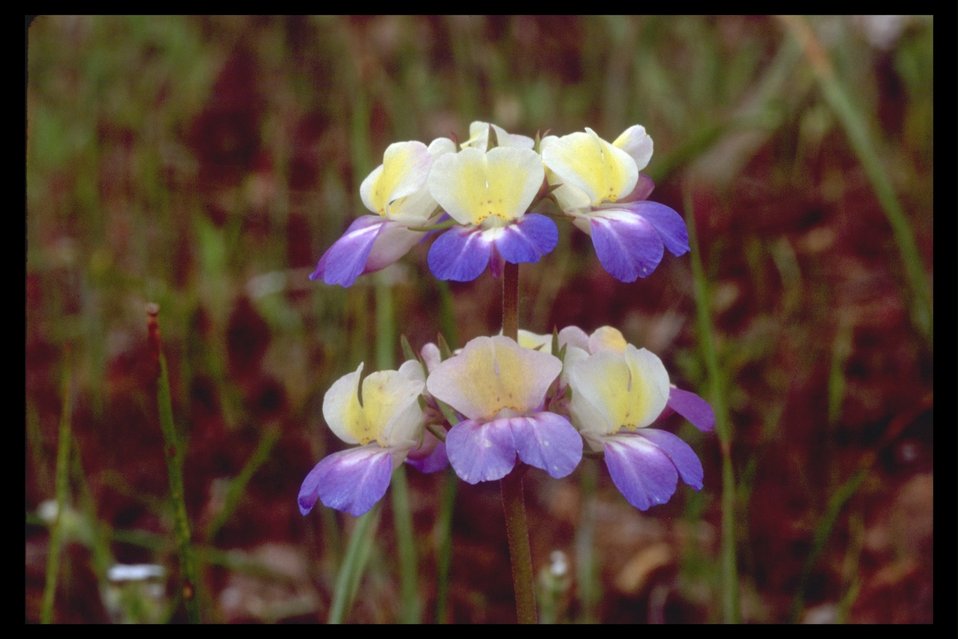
Giant Blue-eyed Mary (Collinsia grandiflora) near Tiller Highway.